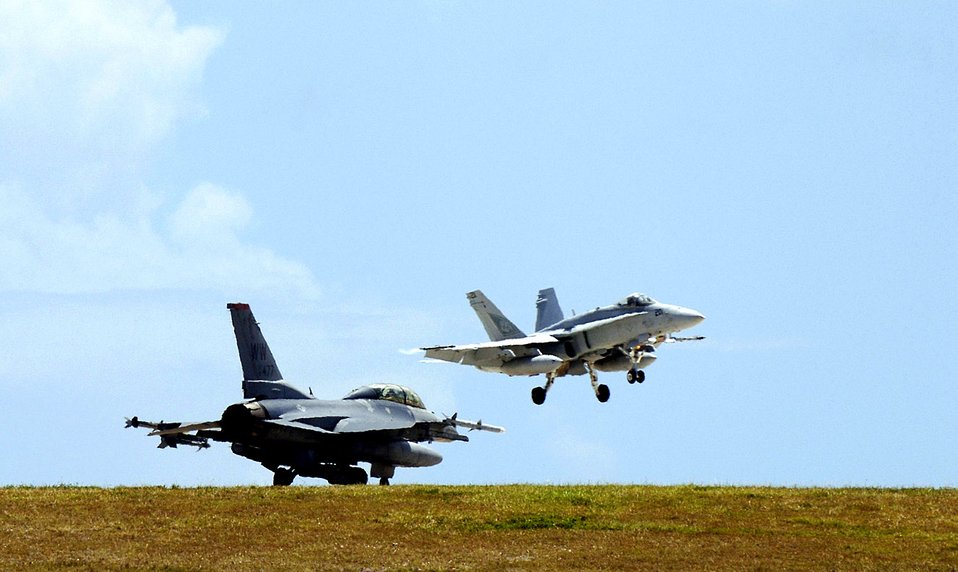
Valiant Shield kicks off

An F-18 Hornet prepares to land while an F-16 Fighting Falcon awaits clearance to take off for a training sortie at Andersen Air Force Base, Guam, as part of Exercise Valiant Shield 2006 on Monday, June 19. Valiant Shield, a U.S. Pacific Command exercise, runs June 19 to 23. It focuses on integrated joint training and interoperability among U.S. military forces while responding to a range of mission scenarios.